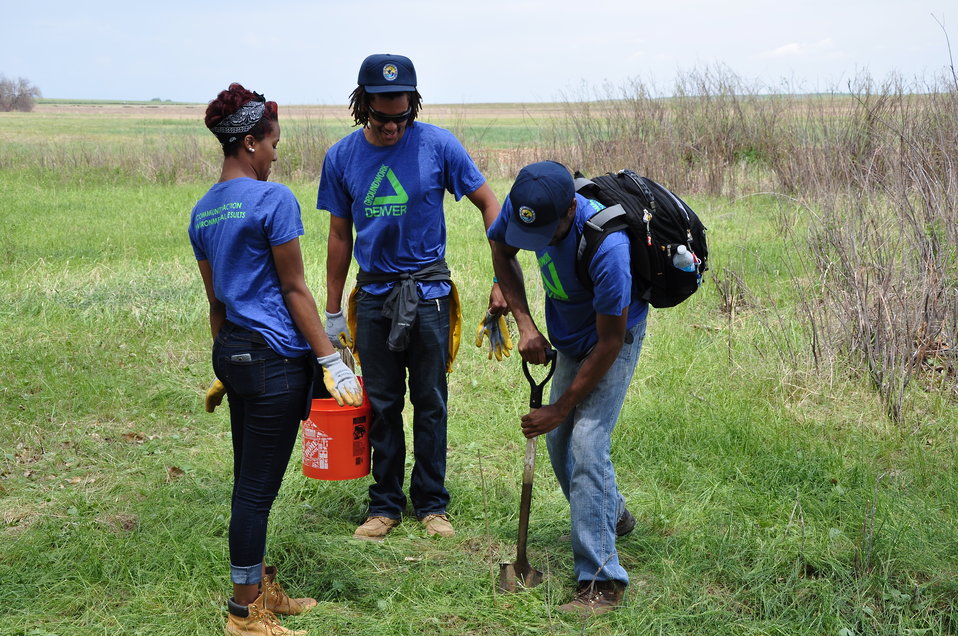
Members of Groundwork Denver Planting Cottonwood Trees